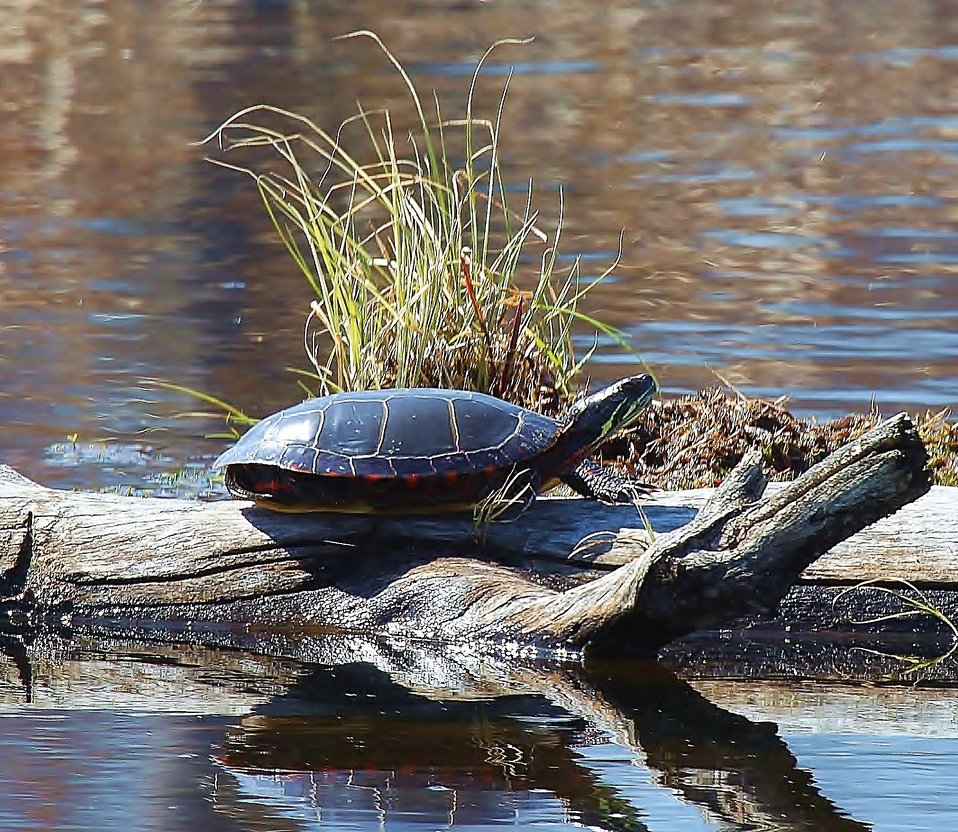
Eastern Painted Turtle

Painted Turtle at Missisquoi National Wildlife Refuge.